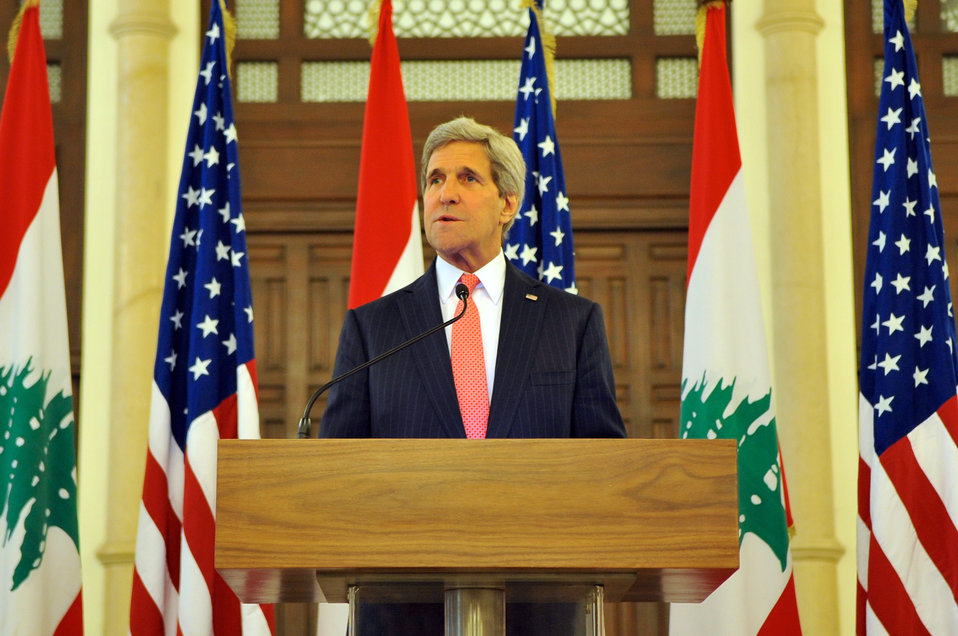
Secretary Kerry Addresses Reporters After Meeting With Lebanese Prime Minister Salam

U.S. Secretary of State John Kerry holds a news conference after meeting with Lebanese Prime Minister Tammam Salam in Beirut, Lebanon, on June 4, 2014.